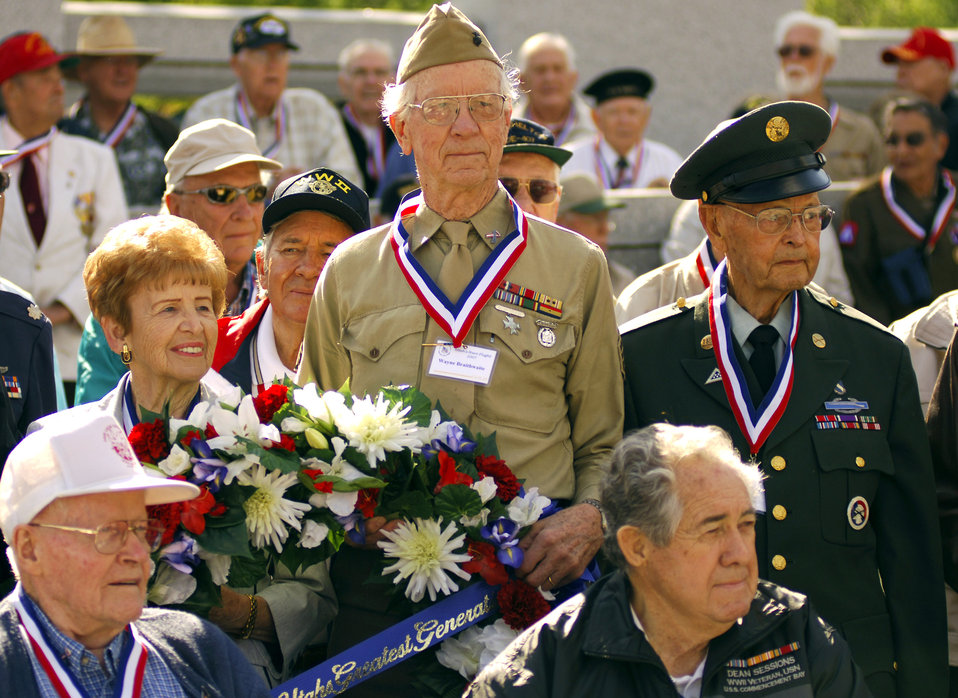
Hero Flight transports 122 WW II veterans in 2007

World War II veterans from Utah place a wreath from the Hero Flight 2007 program at the National World War II Memorial in Washington, D.C., Sept. 15. Hero Flight is an all-volunteer program that sets up trips to allow as many World War II veterans as possible to visit the National World War II Memorial.